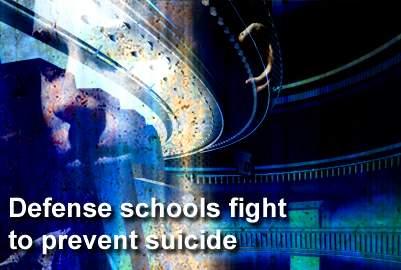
Defense schools work to raise awareness, prevent suicides

Officials from Defense Department schools are taking on the tough topic of suicide to prevent what is a leading cause of death among teens.